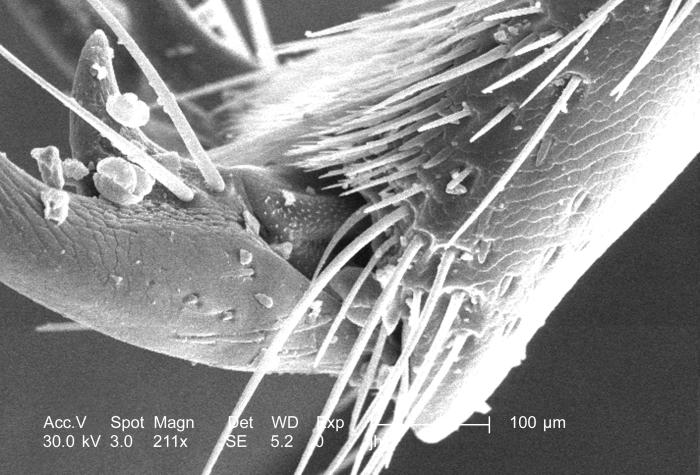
At a low magnification of 211x this scanning electron micrograph (SEM) depicted some of the morphologic details found at the distal end of a leg of a carpenter bee, Xylocopa virginica. Note the configuration of what is known as the "tarsal claw", used by the bee to grasp objects in its environment while obtaining food, or tunneling a nest. As a member of the Phylum Arthropoda, this insect possessed "jointed legs', a morphologic characteristic from which the name Arthro from "joint', and poda from "leg", was derived. One of the leg joints of this bee could be seen in the foreground. Also, note the sensorial "hairs', or "setae', on the exoskeletal surface of both the antenna and leg. These hairs are sensitive to changes in the organism's environment including changes in temperature, wind speed and direction, chemical variations, and changes to the physical make-up of its surroundings, i.e., tactile interaction.